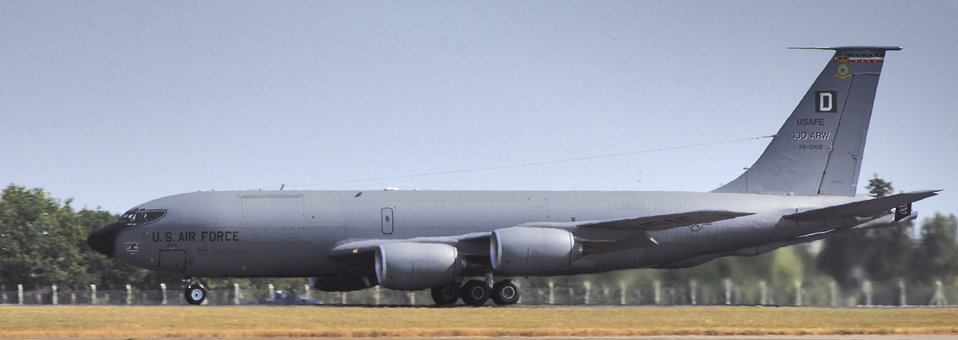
Priority 3: Recapitalization of aging aircraft

Air Force Chief of Staff General T. Michael Moseley said recapitalizaton and modernization of aging aircraft such as this KC-135 Stratotanker is one of the Air Force's three top priorities.